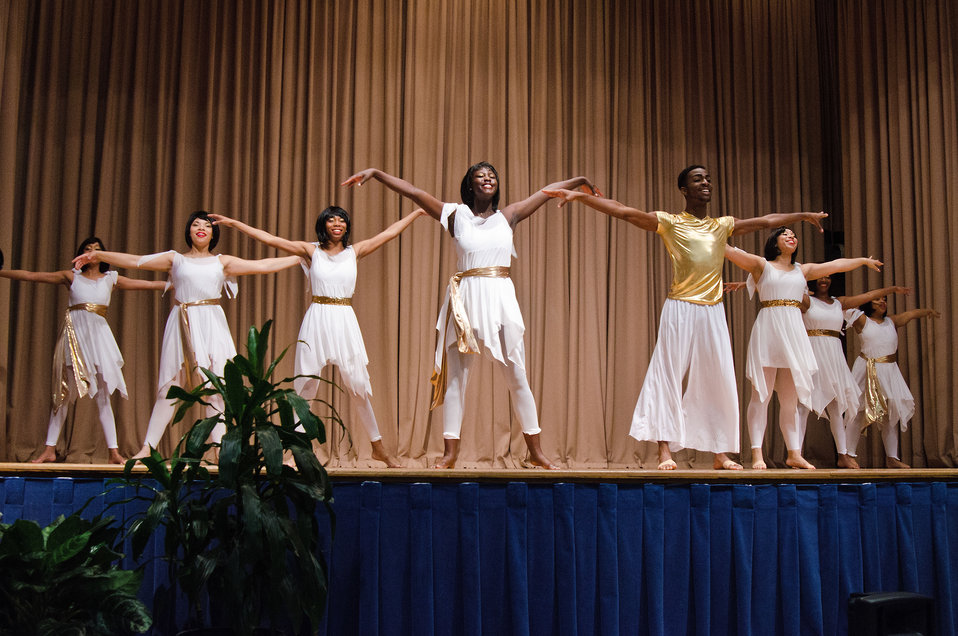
The Virginia State University Sankofa Dance Theatre performed, “A Dancing Tribute to All Women” at the 2012 Women’s History Month Celebration, “Women’s Education – Women’s Empowerment” held at the United States Department of Agriculture on Thursday, March 8, 2012 in Washington, D.C.